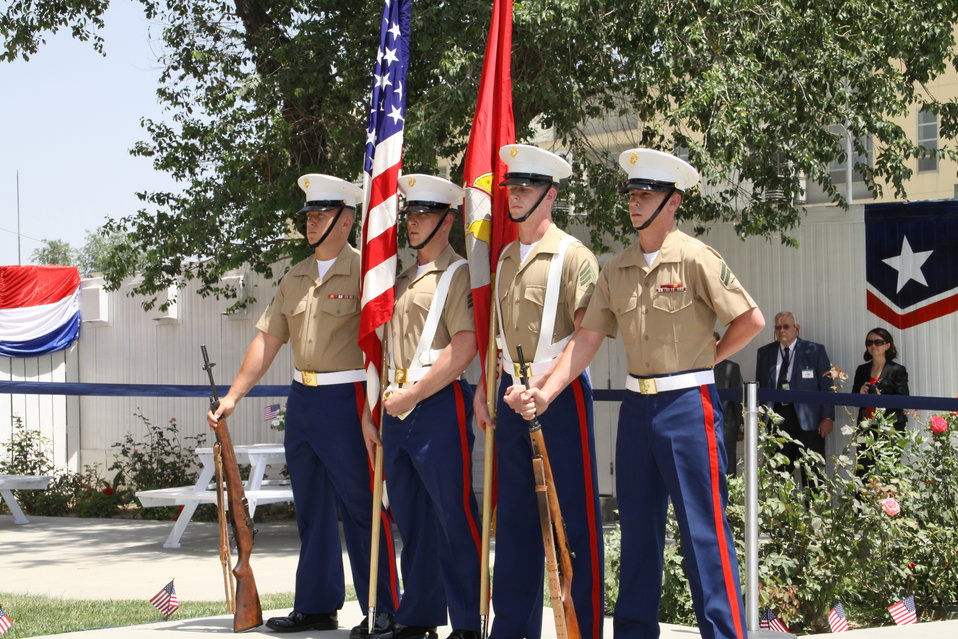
Kabul Official July 4th Celebration